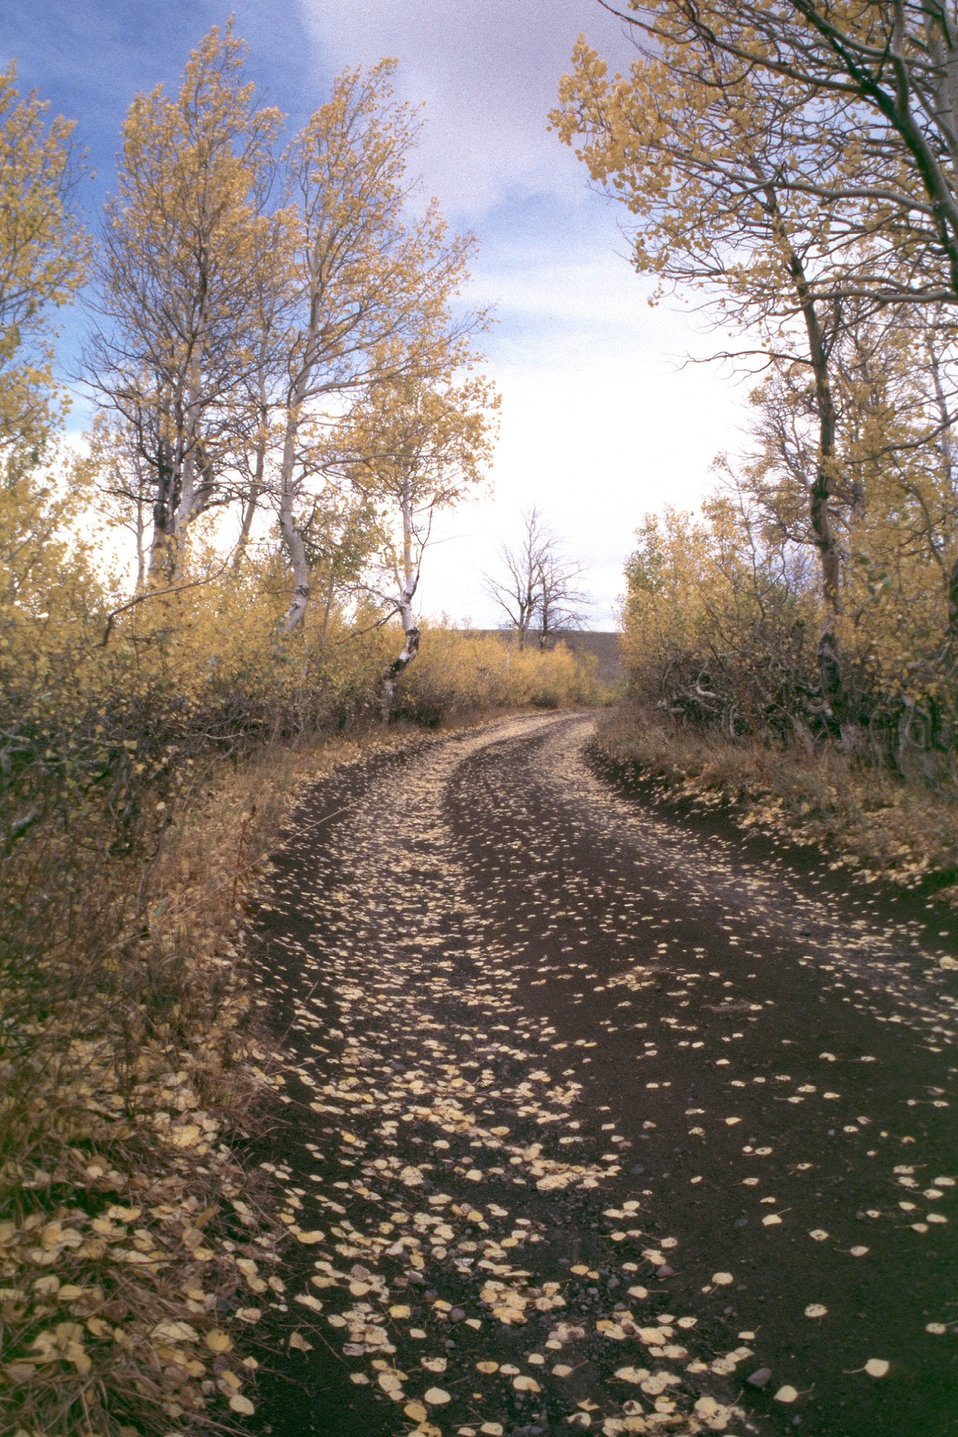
Road to State Cabin at Fish Lake Campground, Steen's Mountain.